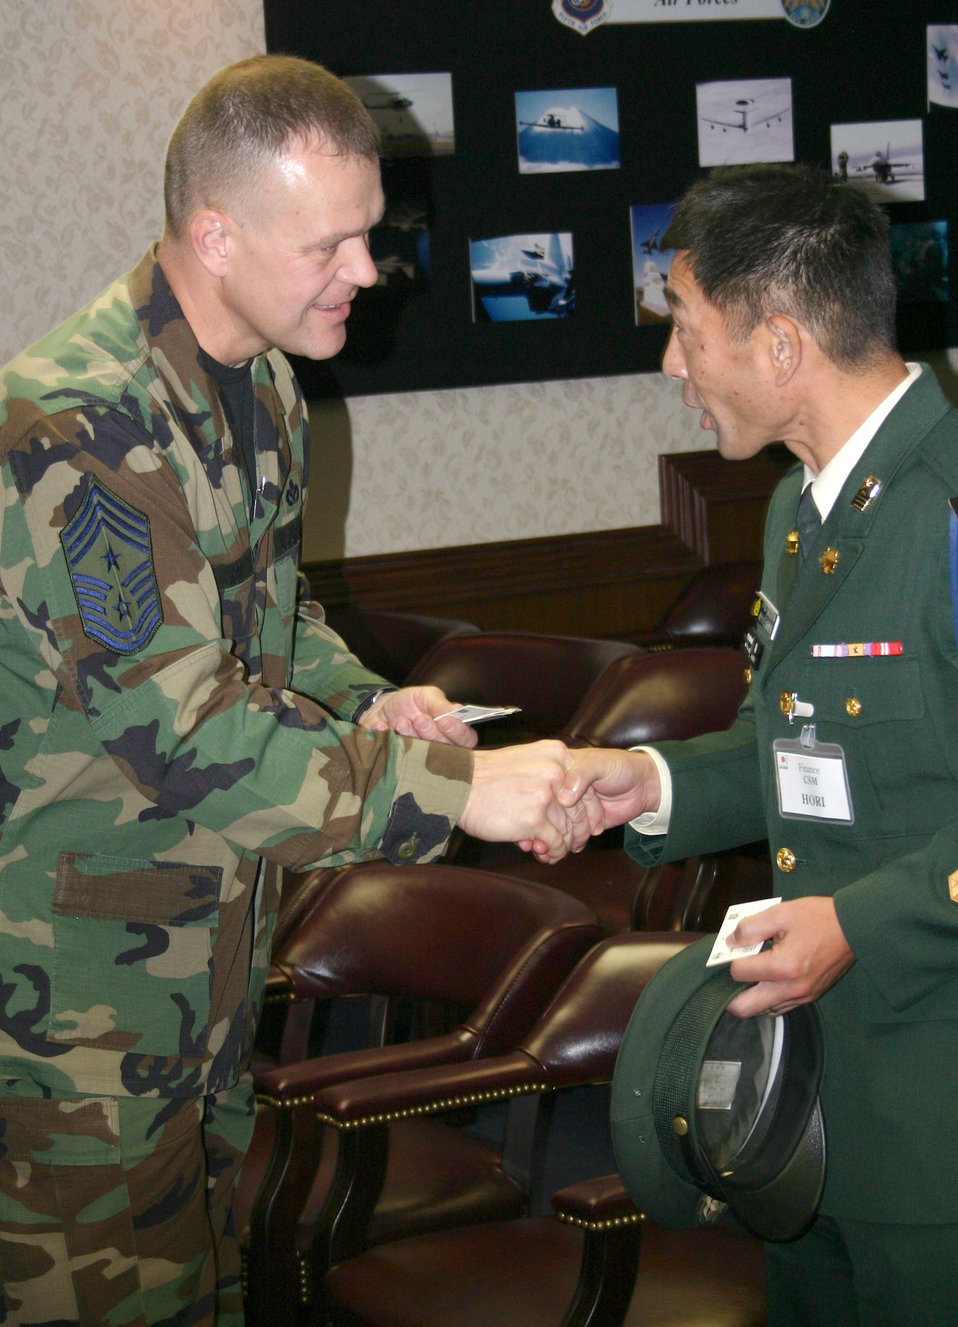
Air Force assists Japanese senior enlisted development

Chief Master Sgt. James Roy speaks to Japanese Ground Self Defense Force Warrant Officer Katsuhiko Hori Nov. 29 at Yokota Air Base, Japan, during a senior enlisted leader exchange conference. Fifth Air Force and U.S. Forces Japan served as host for a 17-member delegation of Japanese senior enlisted leaders interested in learning best practices and improving enlisted force development in the Japanese army. Chief Roy is the command chief for 5th AF and U.S. Forces Japan and Warrant Officer Hori is the command sergeant major of the Japanese Middle Army Finance Command.